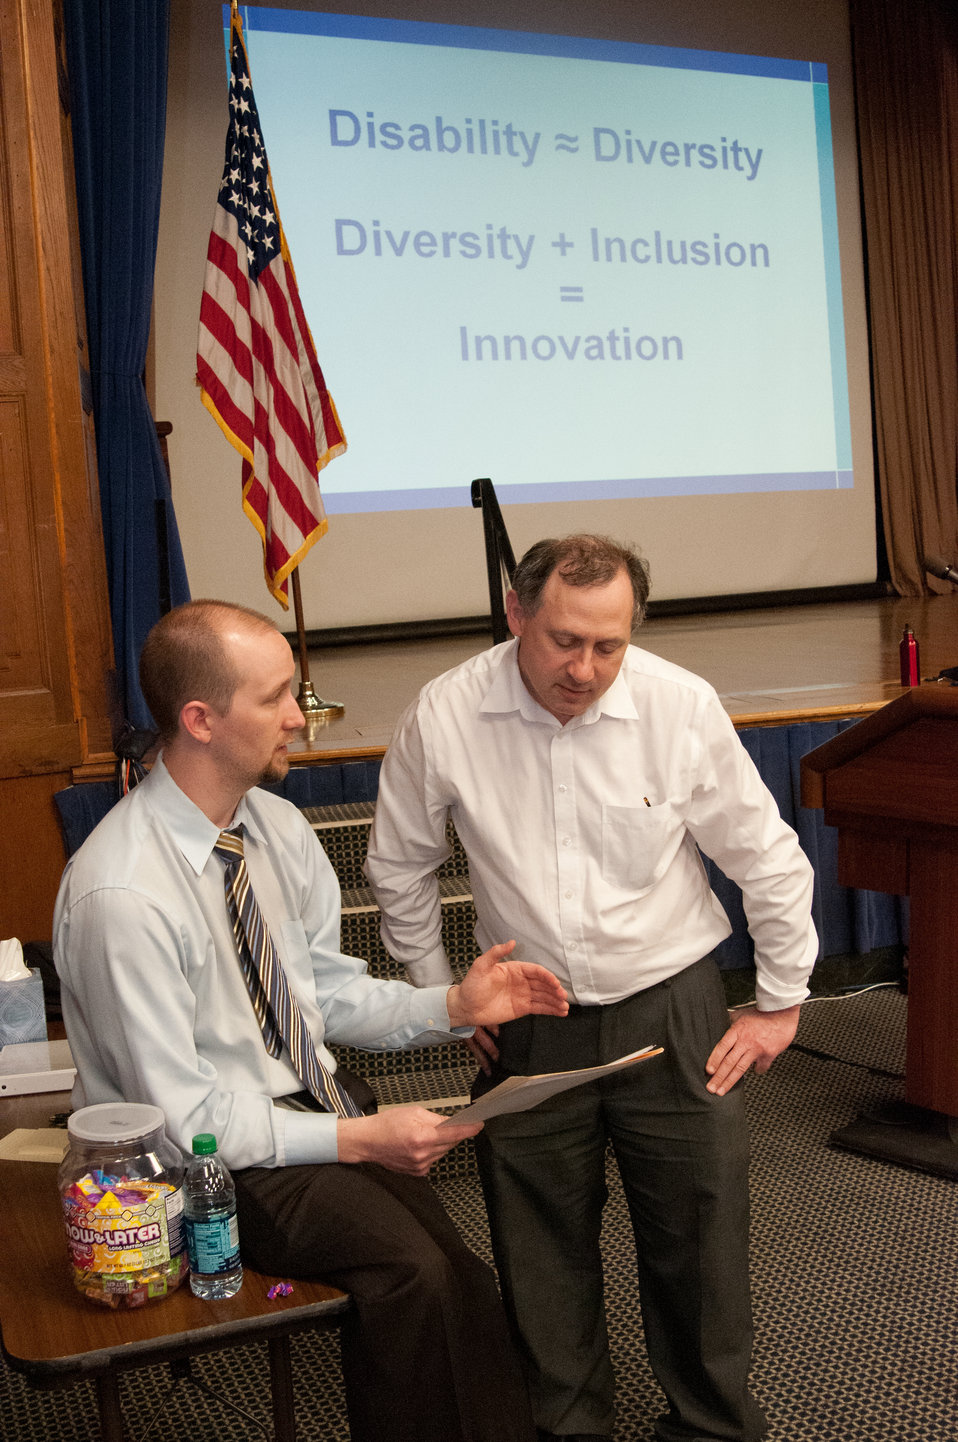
Office of Personnel Management (OPM) Diversity and Inclusion Program Manager Michael Murray and U.S. Department of Agriculture (USDA) Agricultural Marketing Service (AMS) Disability Employment Program Manager Todd Birkenruth discuss disability employment after Murray spoke USDA’s OHRM Disability Employment Program Team Training at USDA in Washington, D.C. on Tuesday, May 14, 2013.